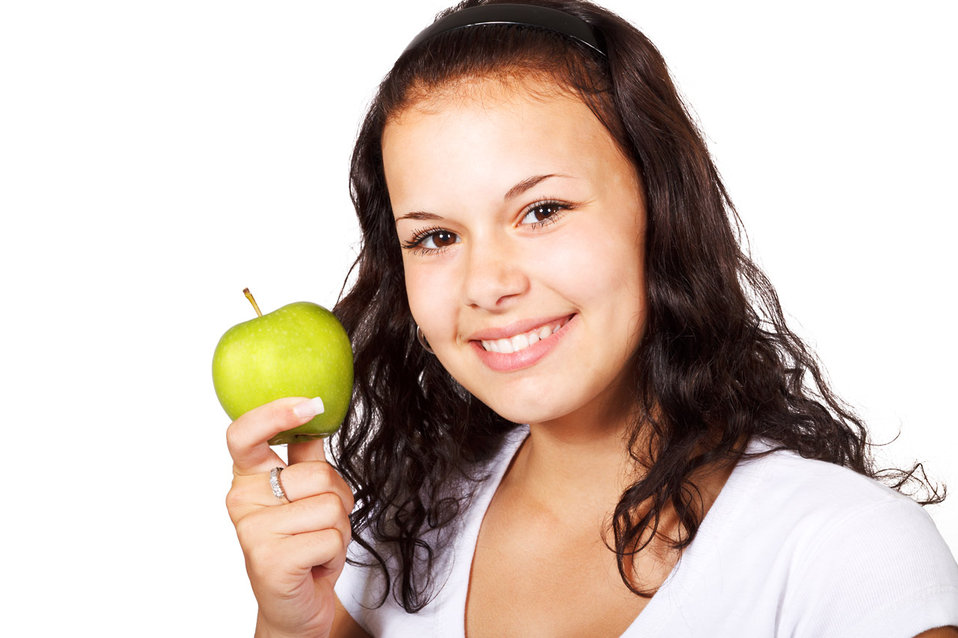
Girl with green apple

Young woman holding green apple isolated on white background.